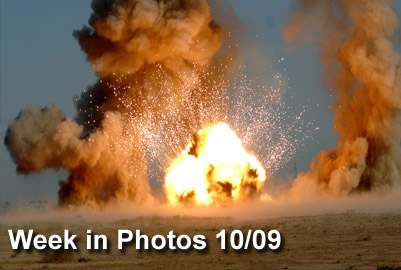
Week in Photos 10/9

Air Force Week in Photos for Oct. 9 highlights photos from around the Air Force. In this photo by Senior Airman Christopher Hubenthal, explosive ordnance disposal technicians from the 332nd Expeditionary Civil Engineer Squadron conduct a controlled detonation Sept. 30, 2009, at Joint Base Balad, Iraq.